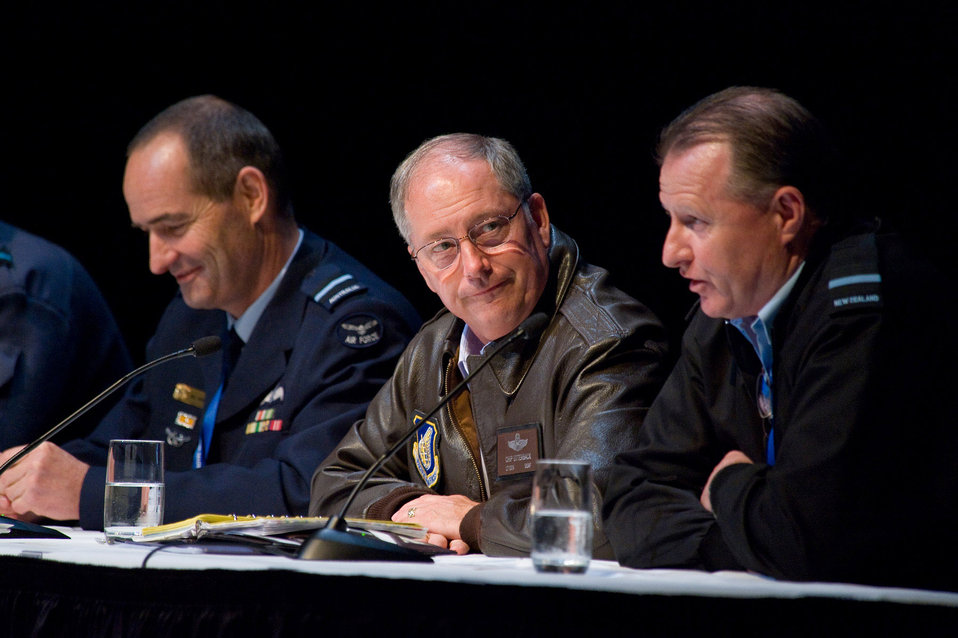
Partnership with New Zealand emphasized at air conference

Panel members at the 2008 Royal New Zealand Air Force Chief of Air Force Conference discussed security in the Pacific and airpower's future contribution. Pictured (far left) is Air Commodore Mel Hupfeld, director of general operations for the Royal Australian Air Force, Lt. Gen. Chip Utterback, 13th Air Force commander, and (far right) Air Commodore Gavin J. Howse, Royal New Zealand Air Force air component commander.